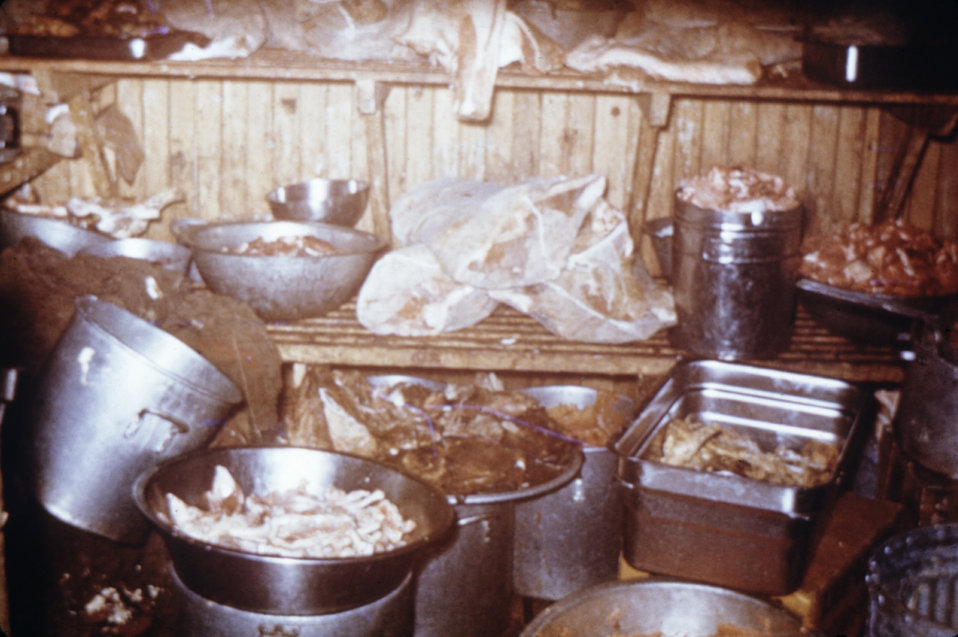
This photograph shows poorly refrigerated food being stored in a migrant labor camp kitchen facility.